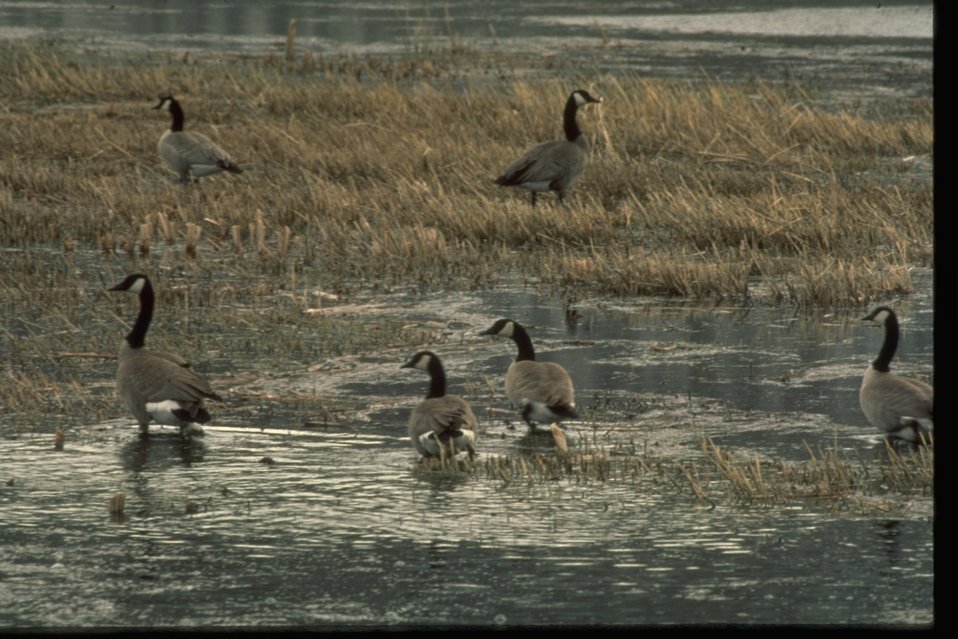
Canadian Geese in marshy ground.